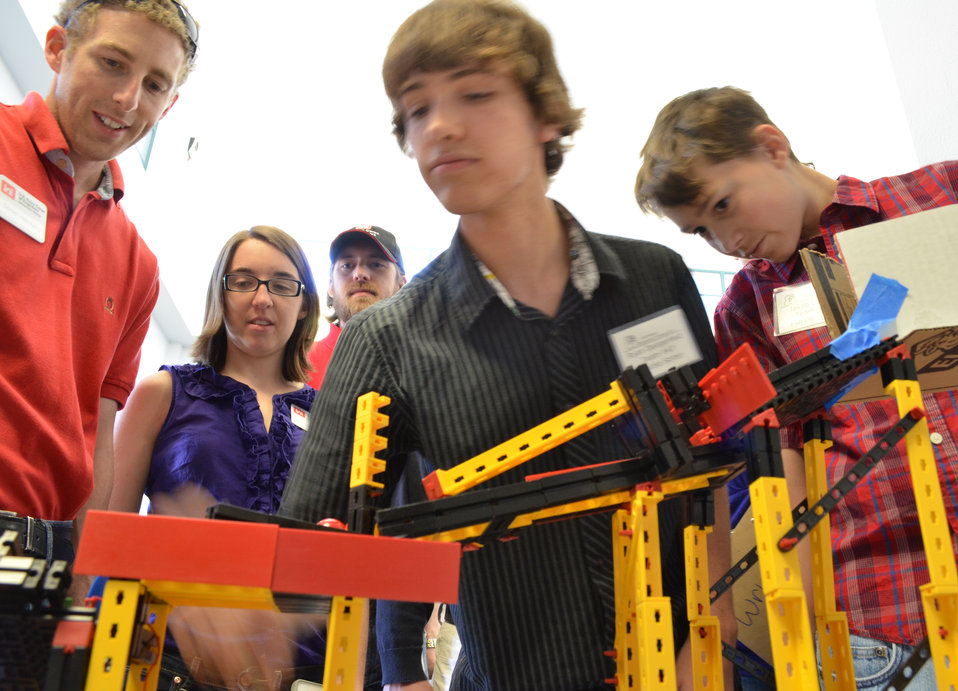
Super sorter

Students Ryan (center) and Jakab (right) demonstrate their electromechanical marble sorter for judges from the U.S. Army Corps of Engineers Sacramento District during the sixth annual Folsom High School Engineering Challenge in Folsom, Calif., April 19, 2013. Looking on, from left, are district personnel Dan Holmberg, Jessica Morelli and Paul Risler. Photo cropped for emphasis.